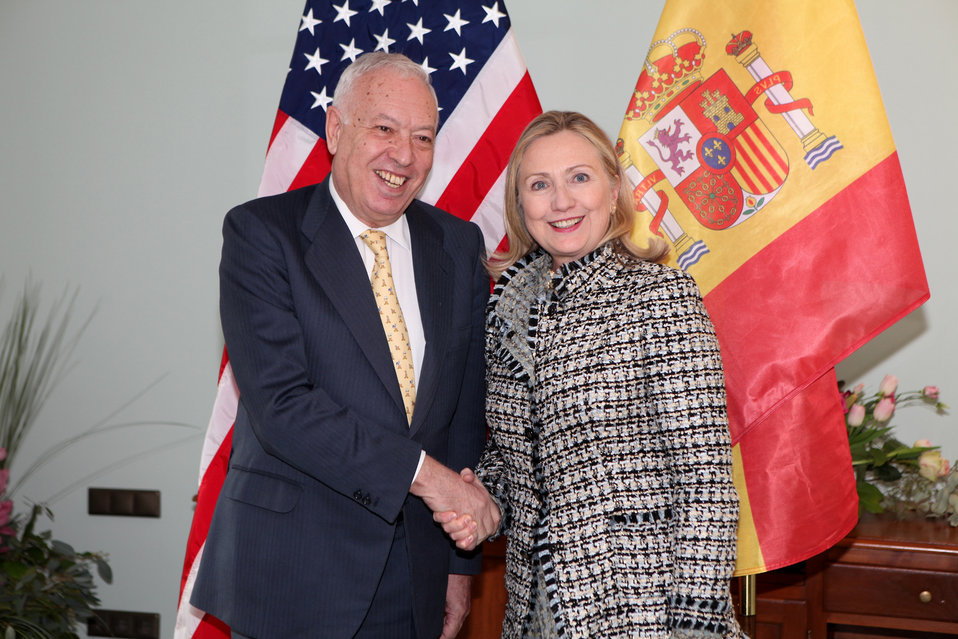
Secretary Clinton Meets With Spanish Foreign Minister Garcia-Margallo

U.S. Secretary of State Hillary Rodham Clinton meets with Spanish Foreign Minister José Garcia-Margallo in Munich, Germany, on February 4, 2012.